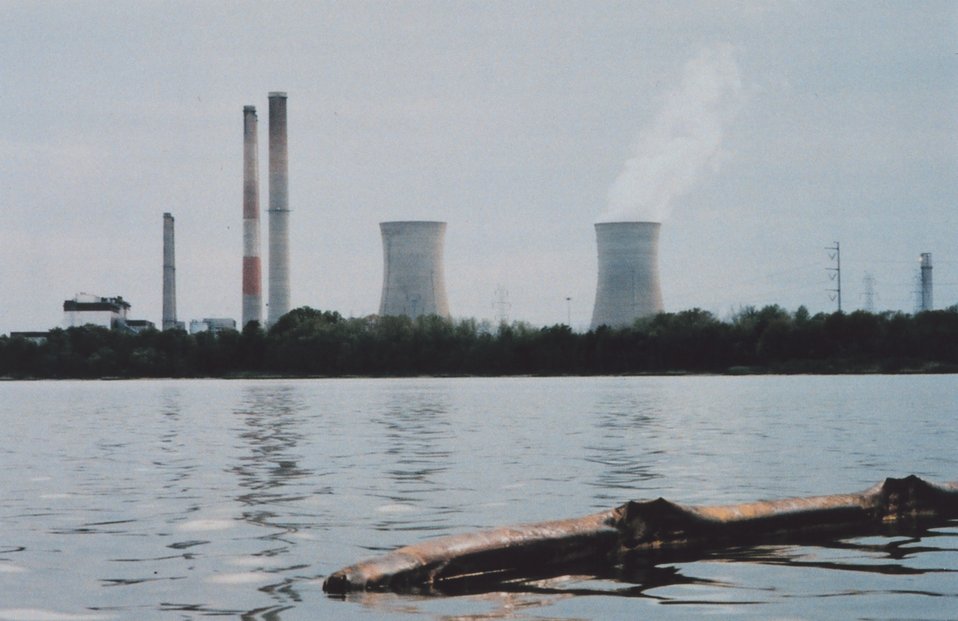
Oil containment boom placed in Swanson Creek, tributary to the Patuxent River, after oil spill at power generating plant.